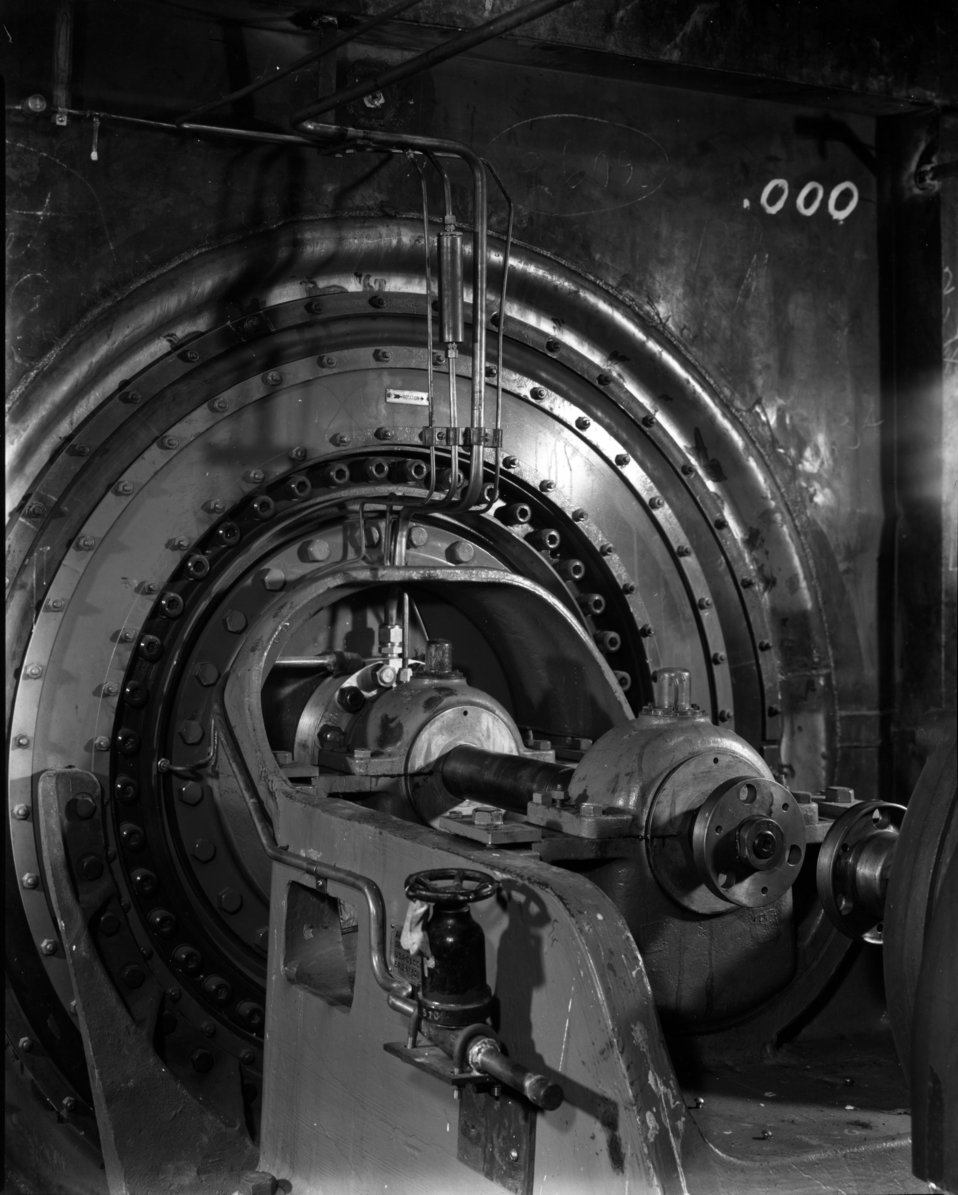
K-27 at Oak Ridge